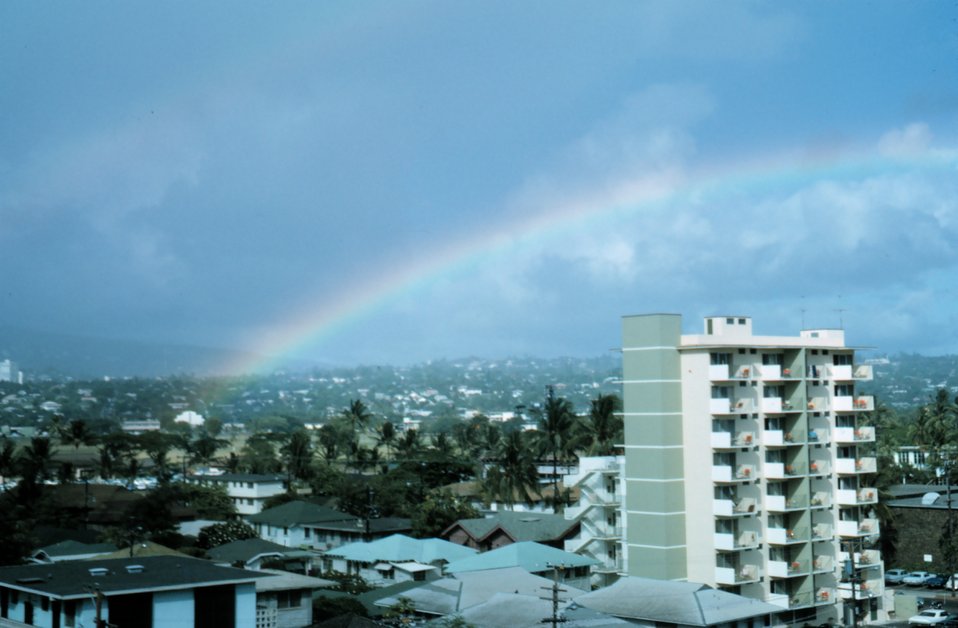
Rainbow over Honolulu